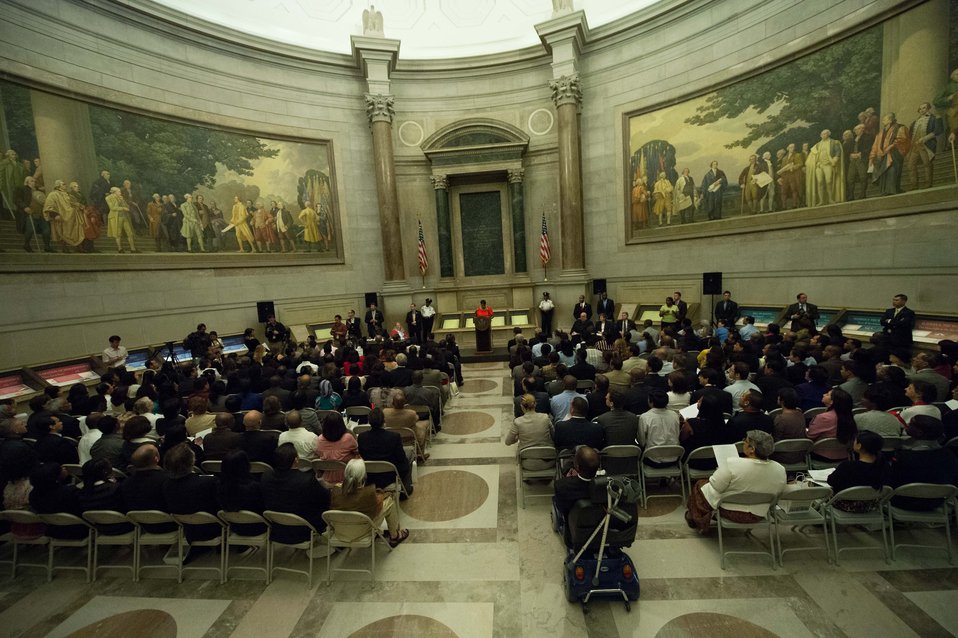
Constitution Day Naturalization Ceremony

Petitioners stand as their names are called